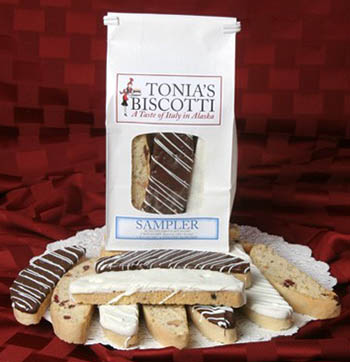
RECALLED – Lemon Biscotti Dipped in White Chocolate

January 3, 2014 – Product Recall – Tonia’s Biscotti II LLC Issues Allergy Alert on Undeclared Wheat, Milk, and Soy in Tonia’s Biscotti Sampler Bags, Lemon Biscotti Dipped in White Chocolate Bags, and Individually Wrapped Biscotti of All Flavors.